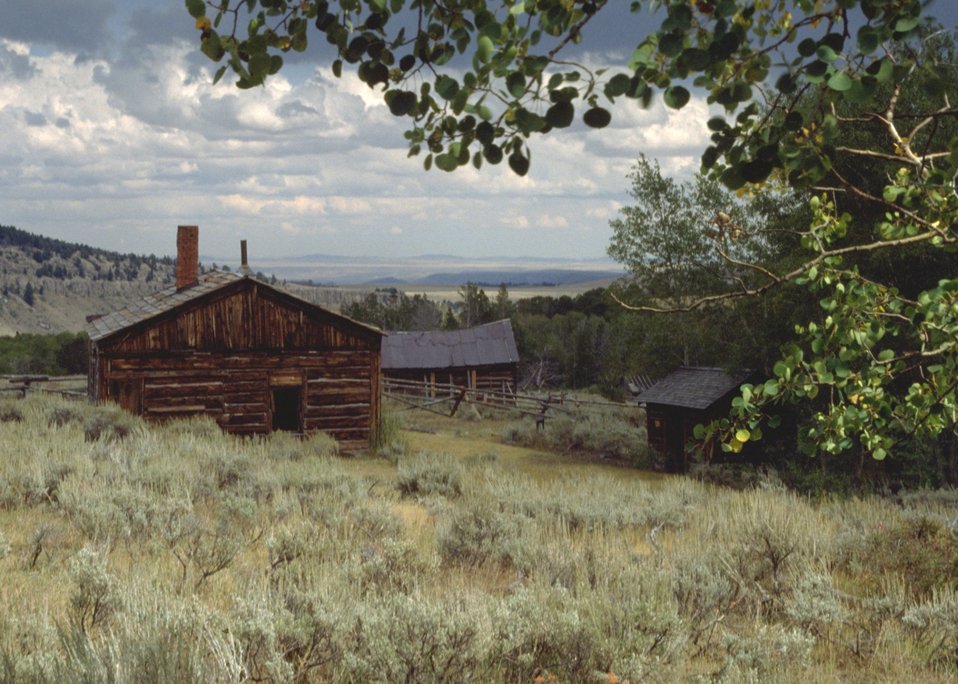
Old Structures.